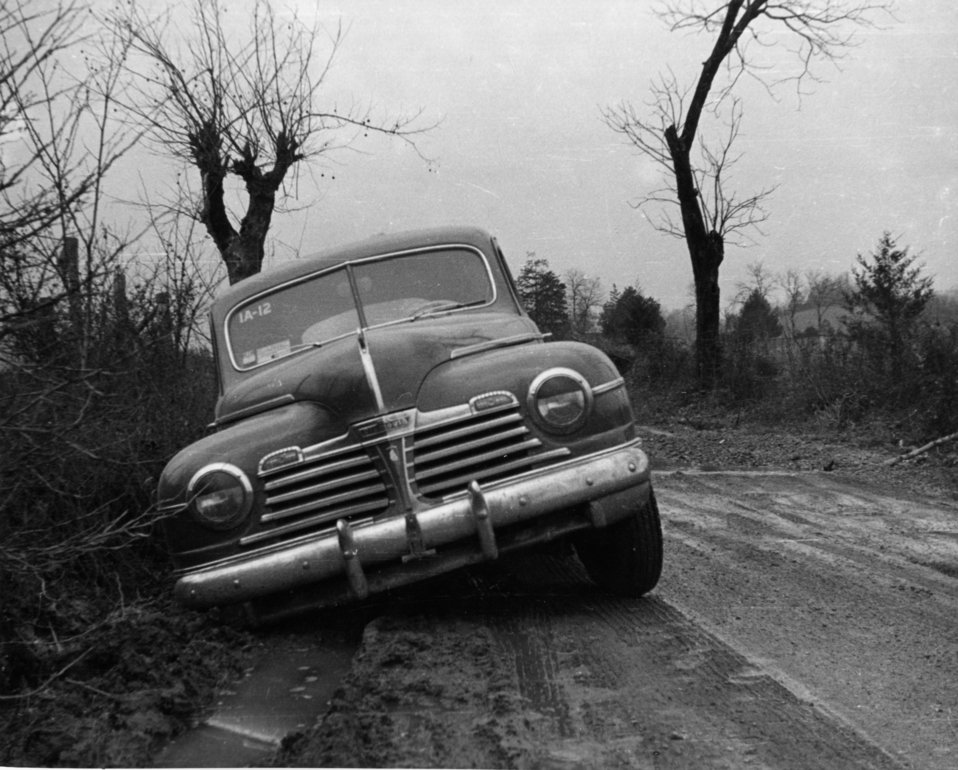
Recreation at Oak Ridge